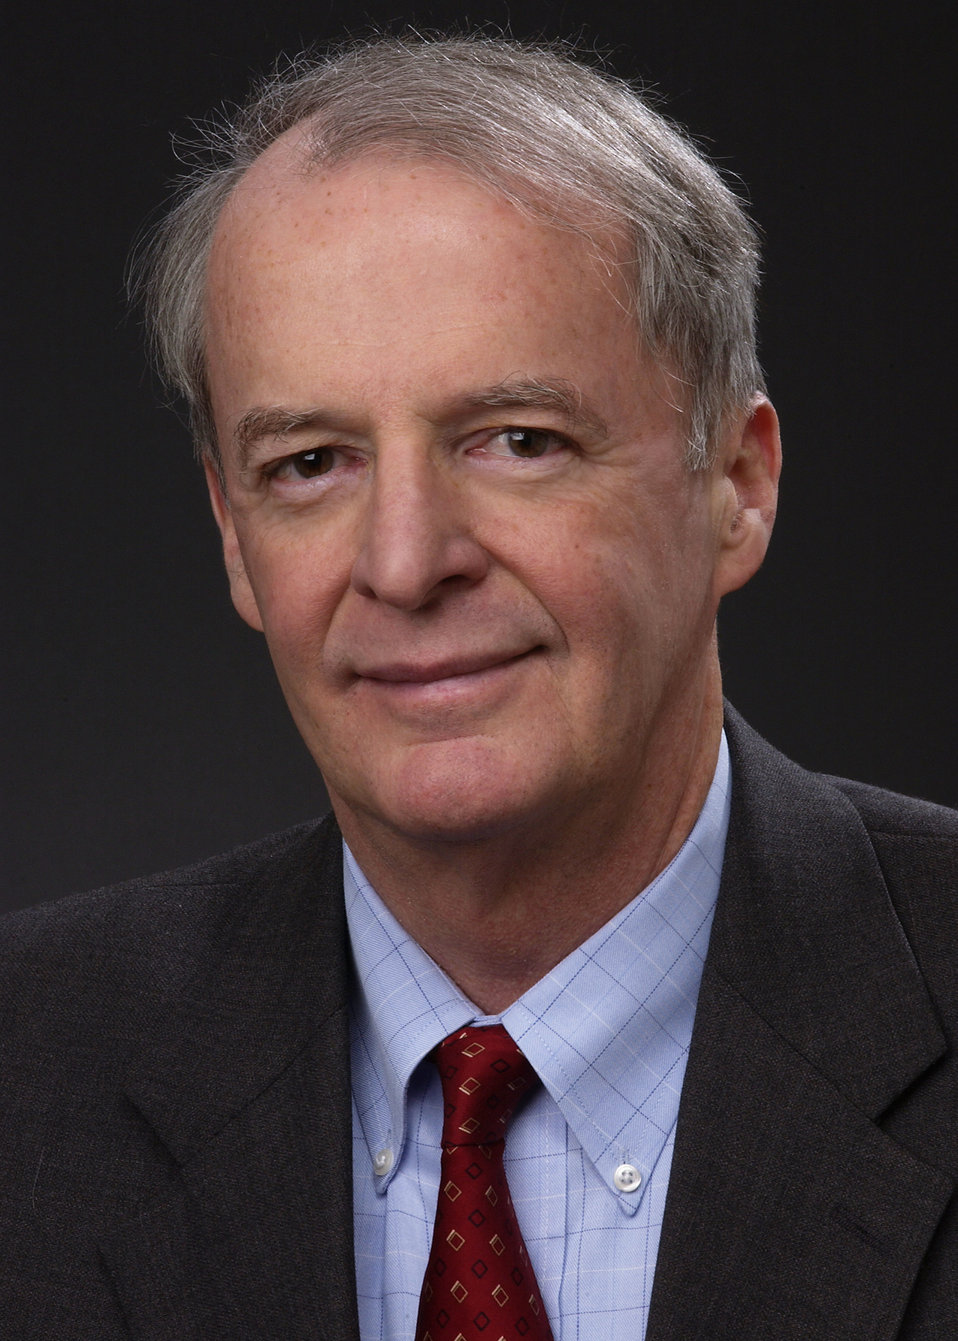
James M. Hughes, M.D., Director of the National Center for Infectious Diseases.